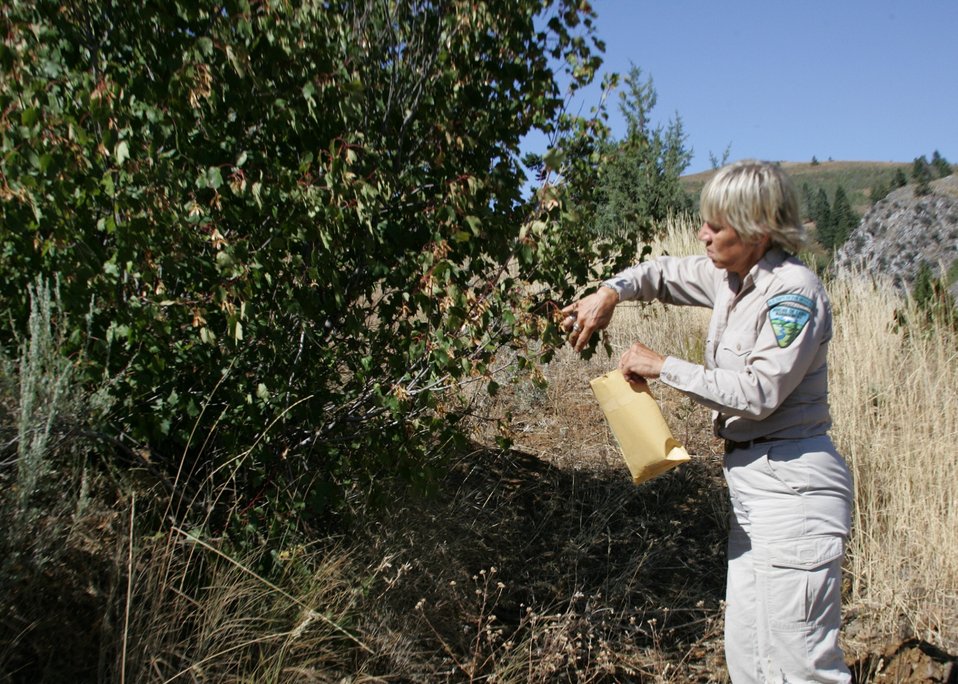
Kata Bulinski from the Baker City Field Office collects seeds from a Moutain Maple in the Snake River area of eastern Oretgon.